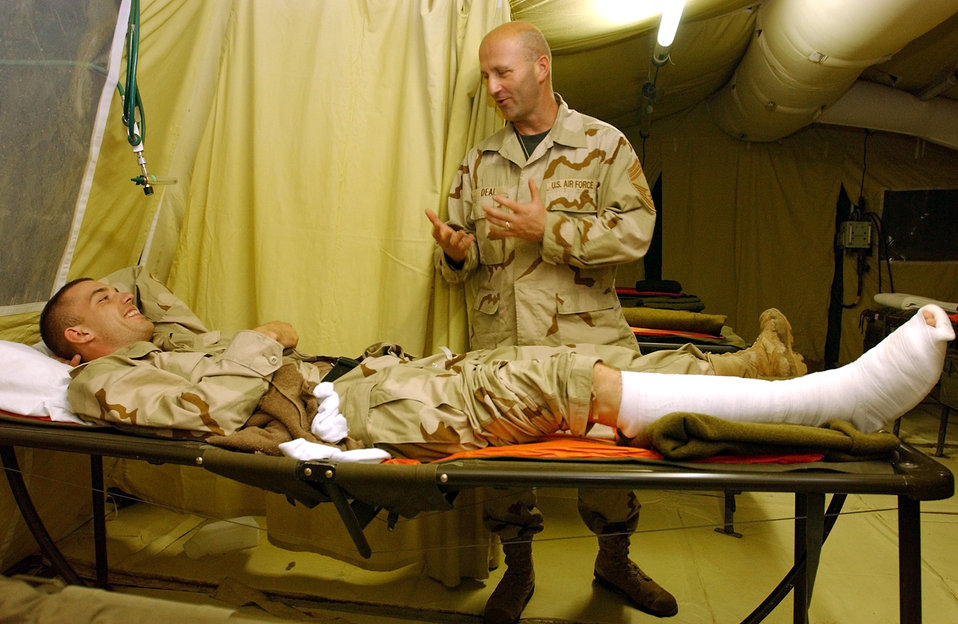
Comforting patients

BAGHDAD INTERNATIONAL AIRPORT, Iraq -- Chief Master Sgt. Barry Deal talks with Army Spc. Samuel Tolley at the Contingency Aeromedical Staging Facility here. Specialist Tolley suffered a staff infection in his foot. Volunteers help the CASF staff and comfort patients. Chief Deal is assigned to the 447th Expeditionary Communications Squadron and Specialist Tolley is assigned to the 394th Quartermaster Battalian.